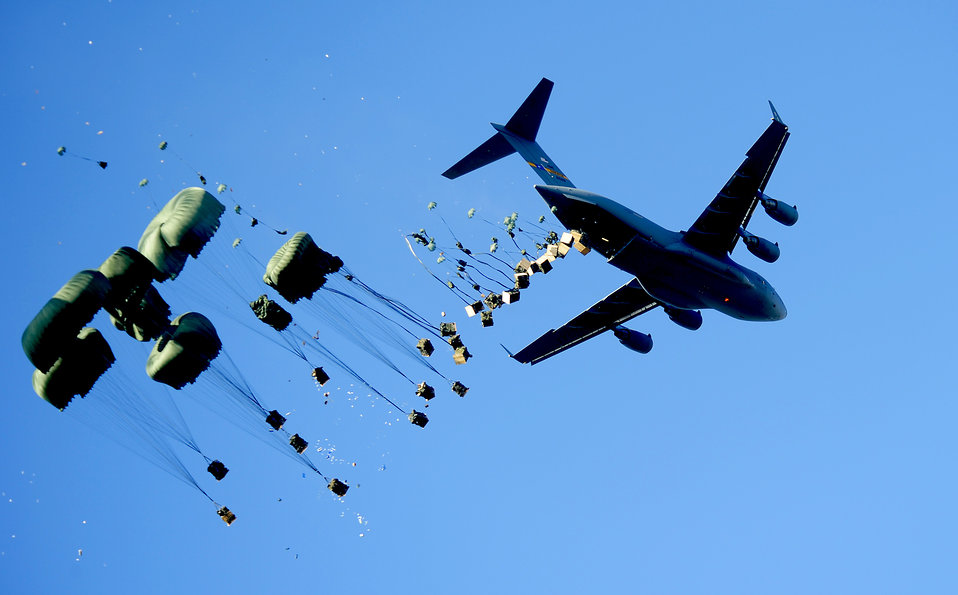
Haiti Earthquake Relief

A C-17 Globemaster III delivers pallets of water and food Jan. 21, 2010, over Mirebalais, Haiti, to be distributed by members of the United Nations. Department of Defense assets have been deployed to assist in the Haiti relief effort following a 7.0 magnitude earthquake that that struck the country Jan. 12, 2010. The aircraft is from the 437th Air Wing out of Charleston Air Force Base, S.C.